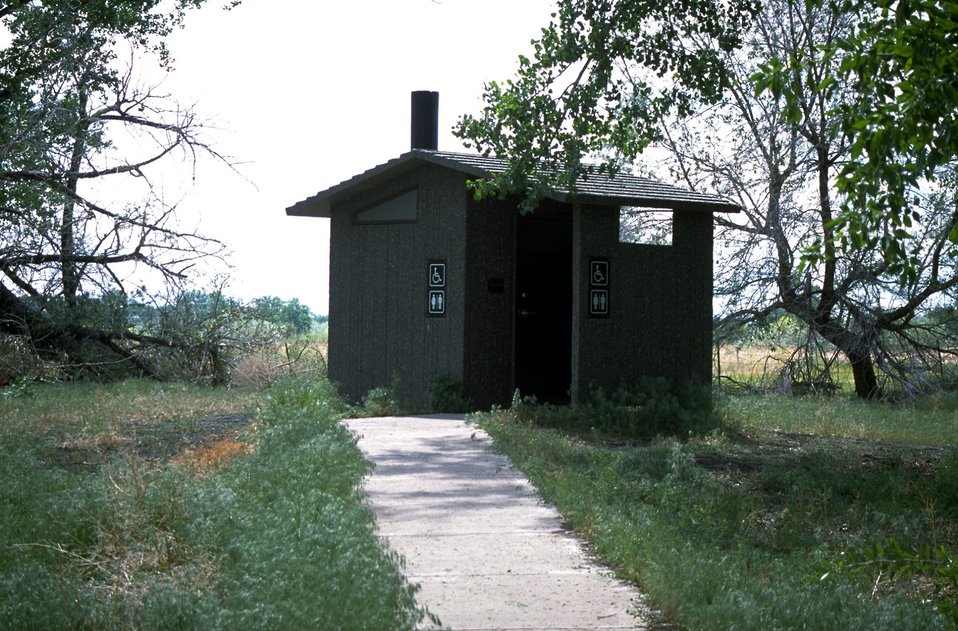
The CXT restroom south of the parking lot in the Sundance Lodge Recreation Area